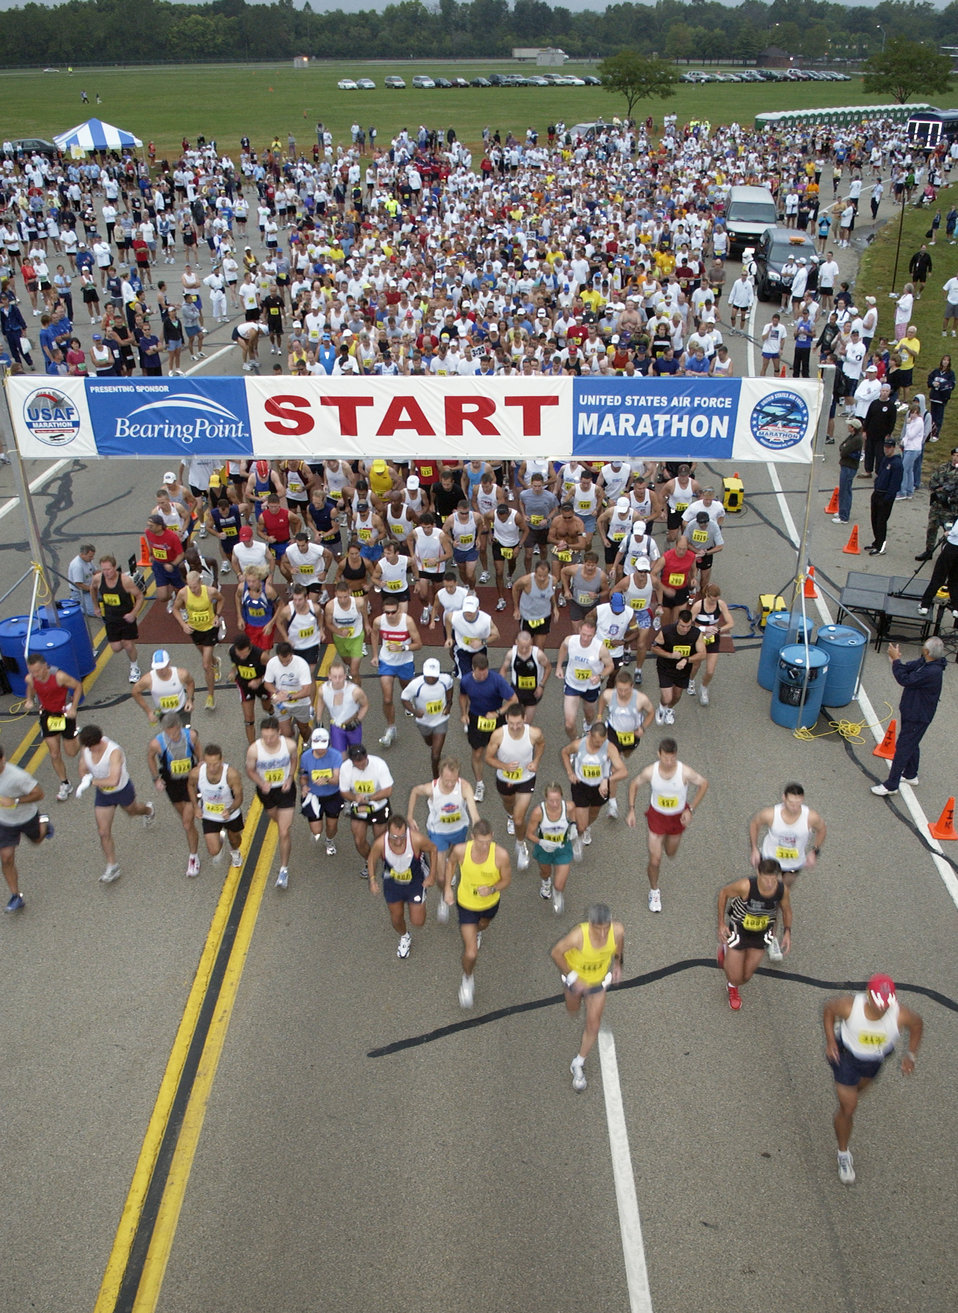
Race to the finish

WRIGHT-PATTERSON AIR FORCE BASE, Ohio -- Runners charge across the starting line during the ninth annual U.S. Air Force Marathon on Sept 17. The runners traversed a grueling 26.2 miles here and in the local community.